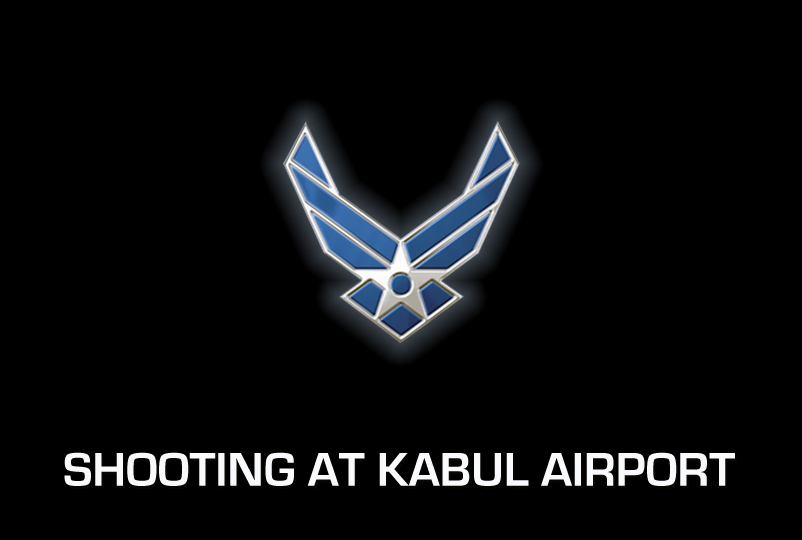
Kabul shooting